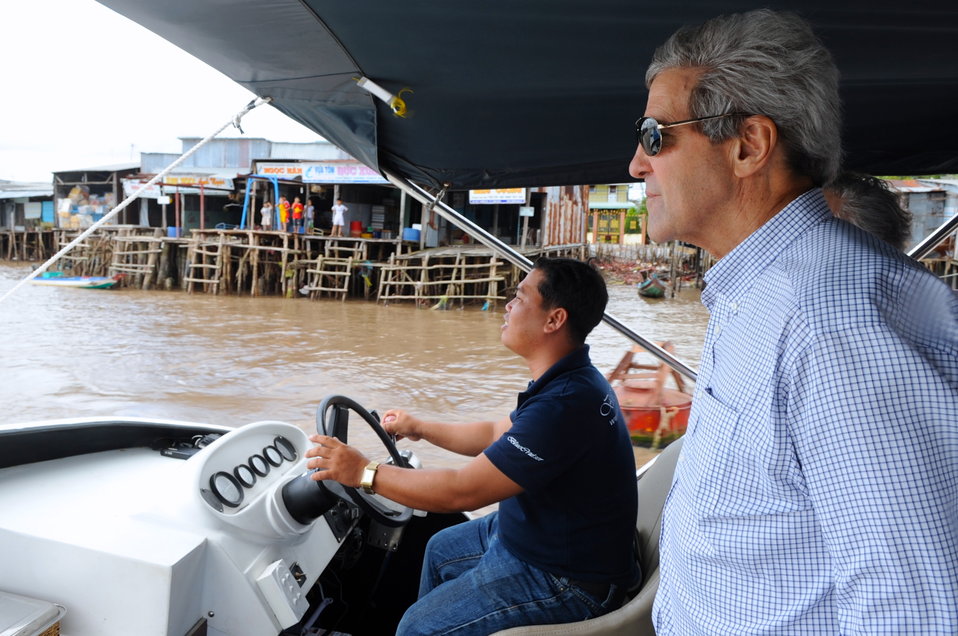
Secretary Kerry Tours the Mekong River Delta

U.S. Secretary of State John Kerry, a Navy veteran of the Vietnam War, sails past a village on the Mekong River Delta before a climate change speech in Vietnam on December 15, 2013.